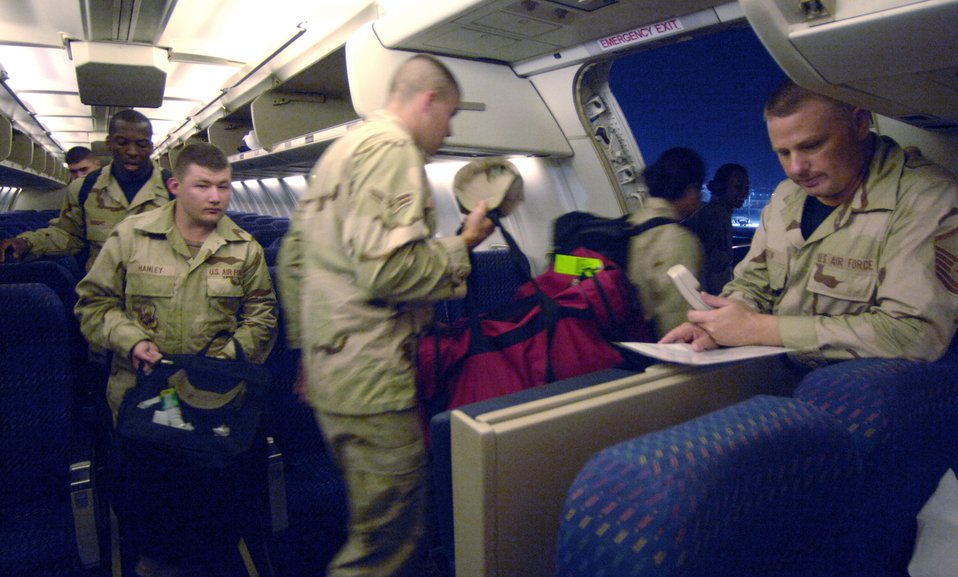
Work begins when boots hit the ground

Minutes after landing in Southwest Asia after a 24-plus hour flight from the United States, Master Sgt. Eric Gadow asks for 30 volunteers to assist ground crews in removing luggage from the cargo hull of a commercial DC-10 airliner Sept. 17. Limited flightline personnel and the average influx of nearly 35,000 servicemembers at peak deployment rotation requires the involvement of passengers in moving personal baggage.